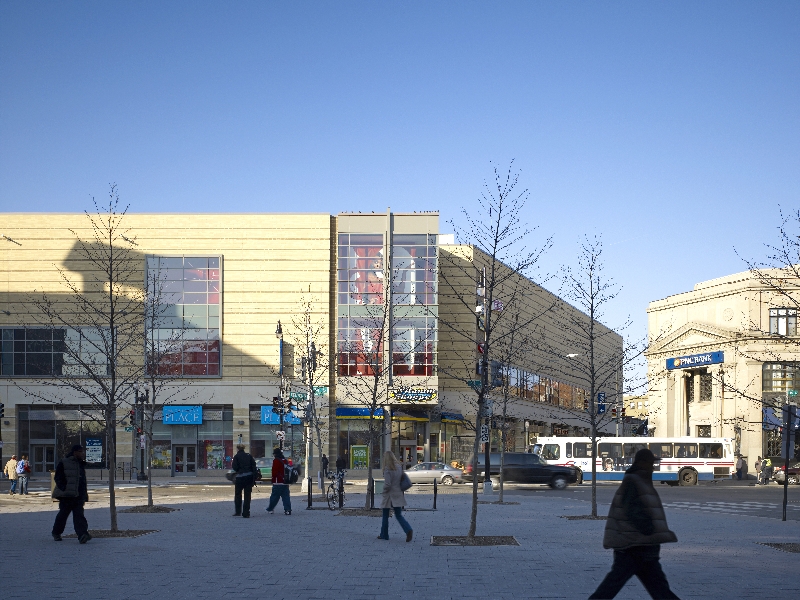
DC USA, 14th & Park Corner